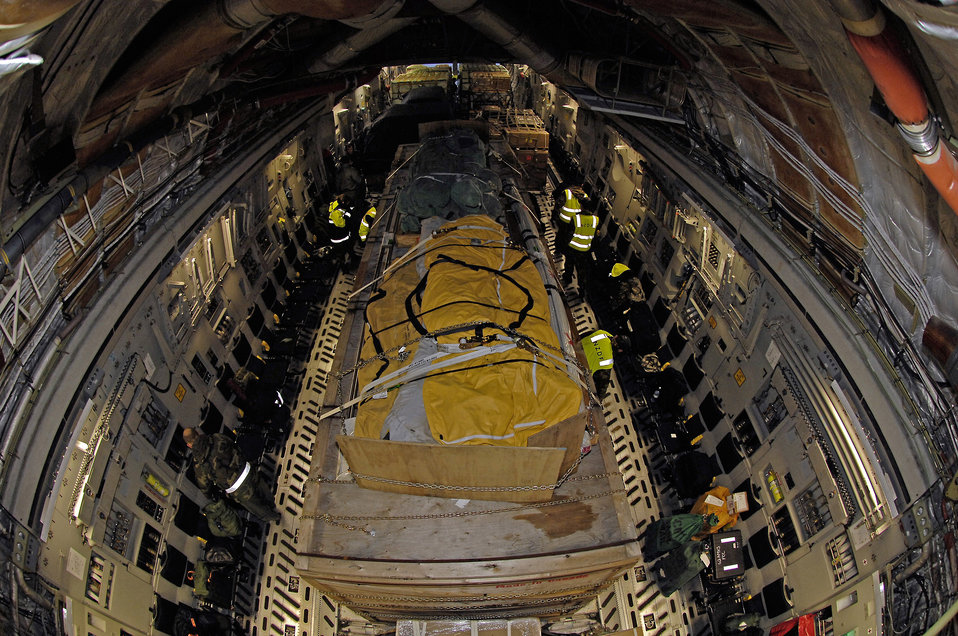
Cool delivery

More than 64,000 pounds of cargo destined for Antarctica sits inside a C-17 Globemaster III Sept. 10 at Christchurch International Airport, New Zealand. The cargo movement was conducted by an aircrew from McChord Air Force Base, Wash., as part of Joint Task Force Support Forces Antarctica, headquartered at Hickam AFB, Hawaii, and led by 13th Air Force. The joint task force is currently conducting Operation Deep Freeze in support of the National Science Foundation and U.S. Antarctic Program.